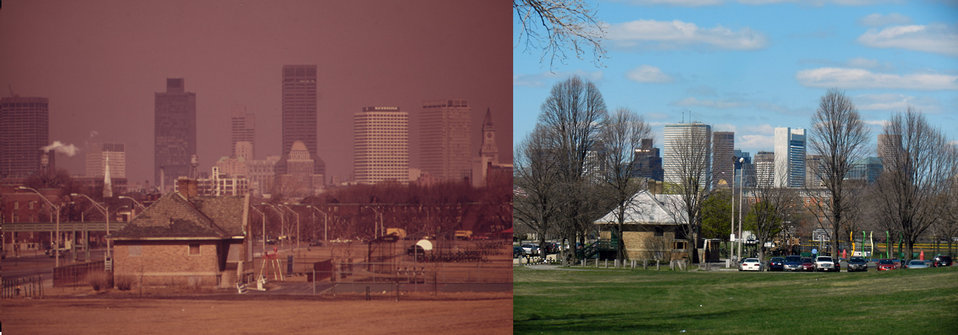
Moakley Park, South Boston, MA 1973 and 2012

'Then' Documerica Photo: March, 1973 Smog over Boston - Looking North from Columbia Point Traffic Circle by Ernst Halberstadt (1910-1987).
'Now' State of the Environment Photo: April, 2012 Boston Skyline from Joe Moakley Park -- Contemporary view of Ernst Halberstadt's original DOCUMERICA photo of 'Smog over Boston - Looking North from Columbia Point Traffic Circle,' by Roger Archibald.

Ernst Halberstadt, once a muralist for the Works Progress Administration (WPA), went to the greater Boston, Massachusetts area for his DOCUMERICA assignment. His photographs captured Boston landmarks and everyday life in the city.

Join in at www.flickr.com/groups/ourenvironment